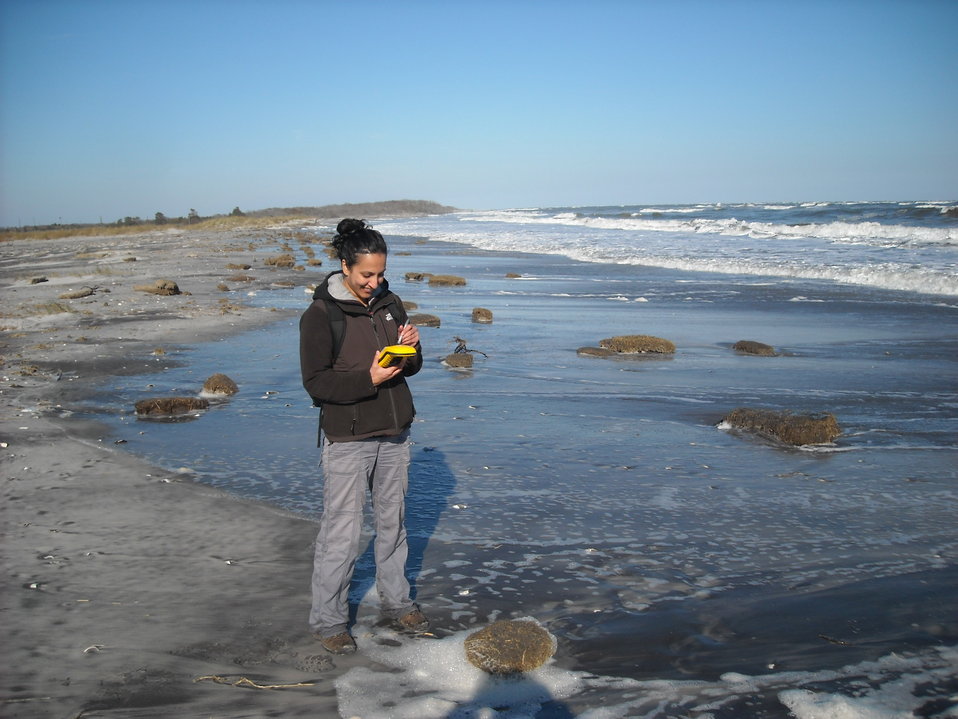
Little Beach, Moosehorn National Wildlife Refuge, ME

2011 Wilderness Fellow Monica Patel conducting shoreline survey